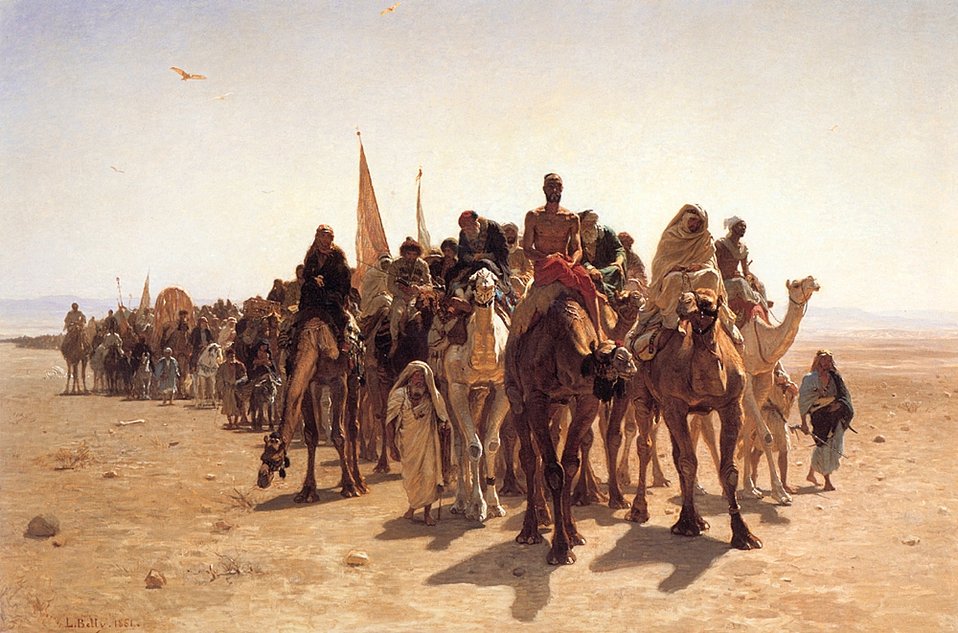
'Pelerins allant à la Mecque', Léon Belly, 1861